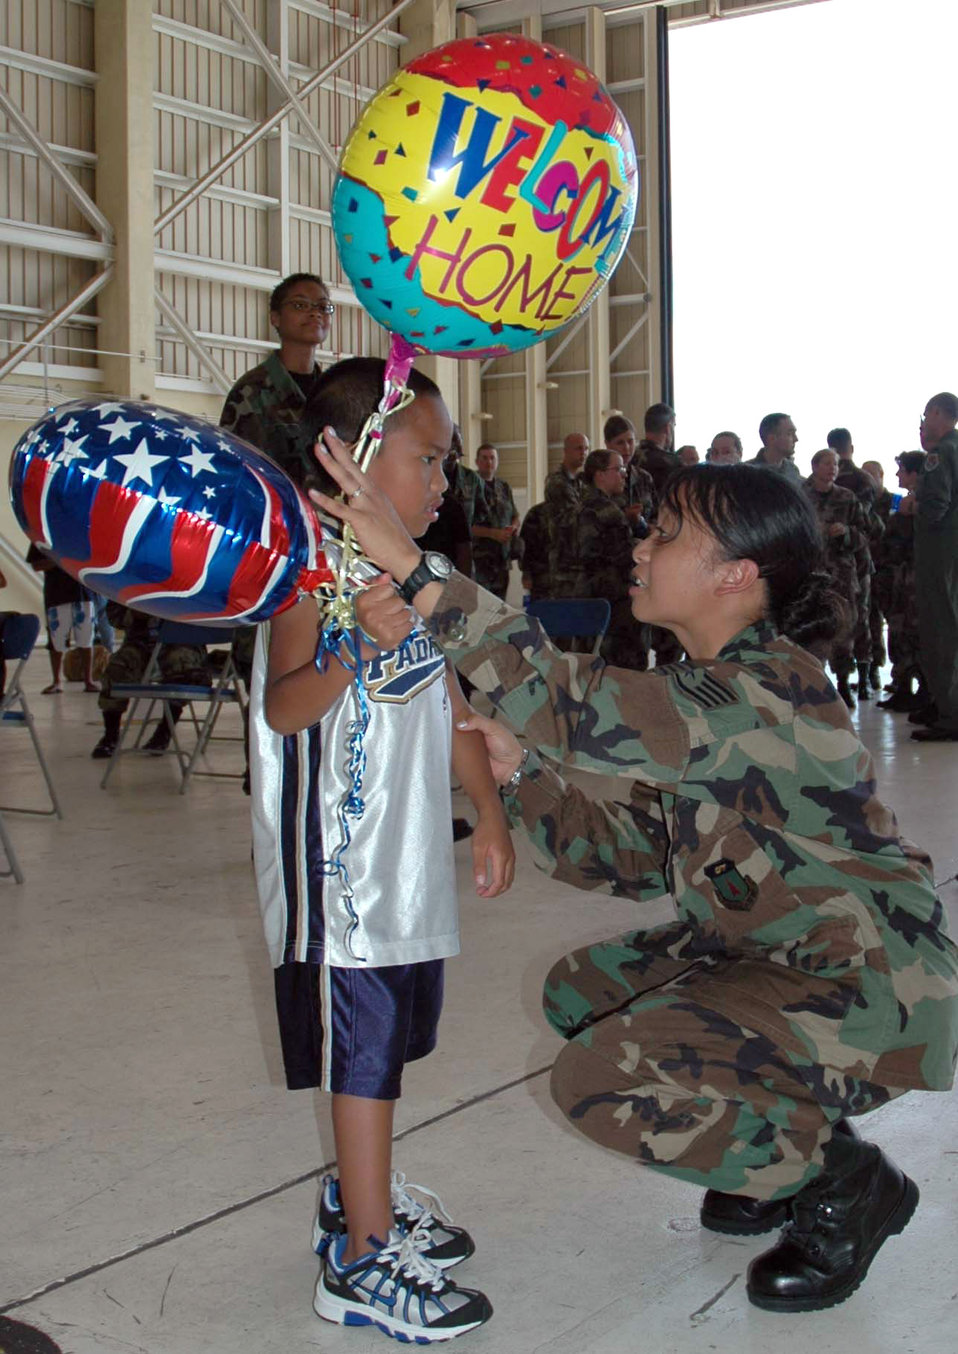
Andersen members return from USNS Mercy mission

Staff Sgt. Mary Anne Viloria shares a moment with her 7-year-old son, R.J., during a welcome home celebration at Andersen Air Force Base, Guam, Sept. 10. Members from the 36th Medical Group, 36th Wing and the U.S. Navy Helicopter Sea Combat Squadron 25 returned home following a 72-day humanitarian and civic assistance deployment on the USNS Mercy. Sergeant Viloria is assigned to the 36th MDG.